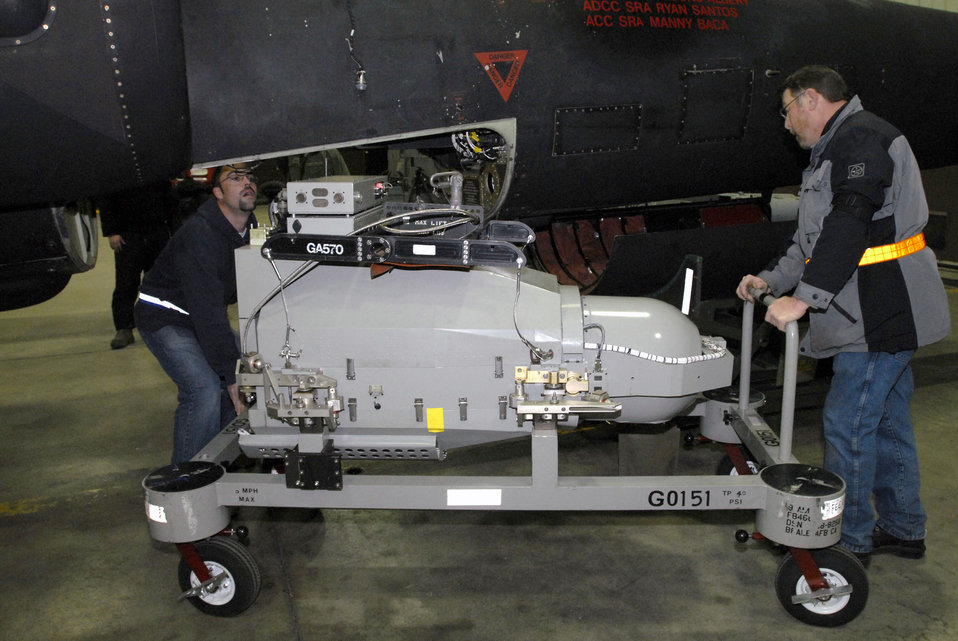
Optical bar camera

Ron Deagle (left) and Rod Blazvick prepare to load an optical bar camera into a U.S. Air Force U-2 high-altitude, all-weather surveillance and reconnaissance aircraft March 13, 2011, at Osan Air Base, South Korea. The U-2 is being prepared for a humanitarian mission to capture imagery of the earthquake- and tsunami-affected areas of Japan.